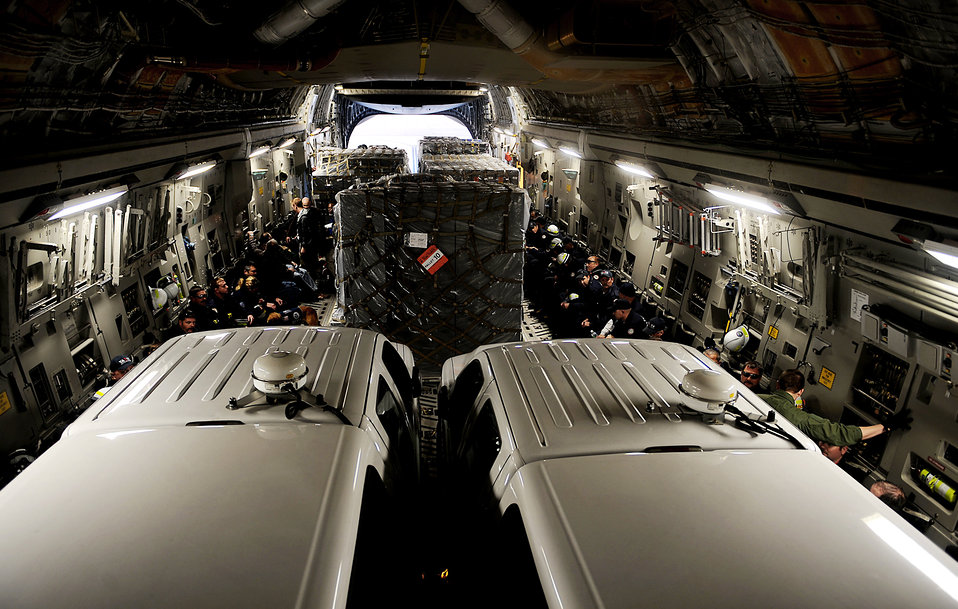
Haiti Earthquake Relief

Members from the Virginia Task Force 2 Urban Search and Rescue team and supplies get ready for take-off aboard a C-17 Globemaster III from Travis Air Force Base, Calif., Jan. 15, 2010, at Norfolk, Va. The Virginia Task Force 2 team is heading to Haiti as part of the Haitian earthquake relief effort.